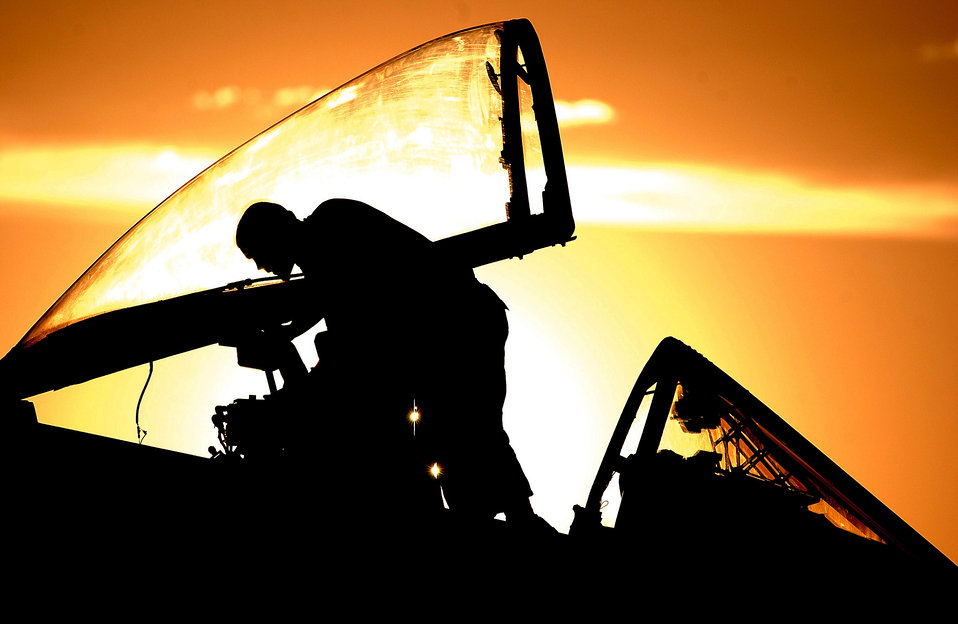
Working through sundown

NAVAL AIR STATION FALLON, Nev. -- Staff Sgt. Jonas Concepcion performs post-flight checks on an A-10 Thunderbolt II following a mission at Desert Rescue XI, Aug. 12. The joint-service combat search and rescue training exercise simulates downed aircrew behind enemy lines and allows airmen to practice rescue-related missions. Concepcion is a crew chief from the 118th Fighter Squadron, Connecticut Air National Guard, Bradley Field.